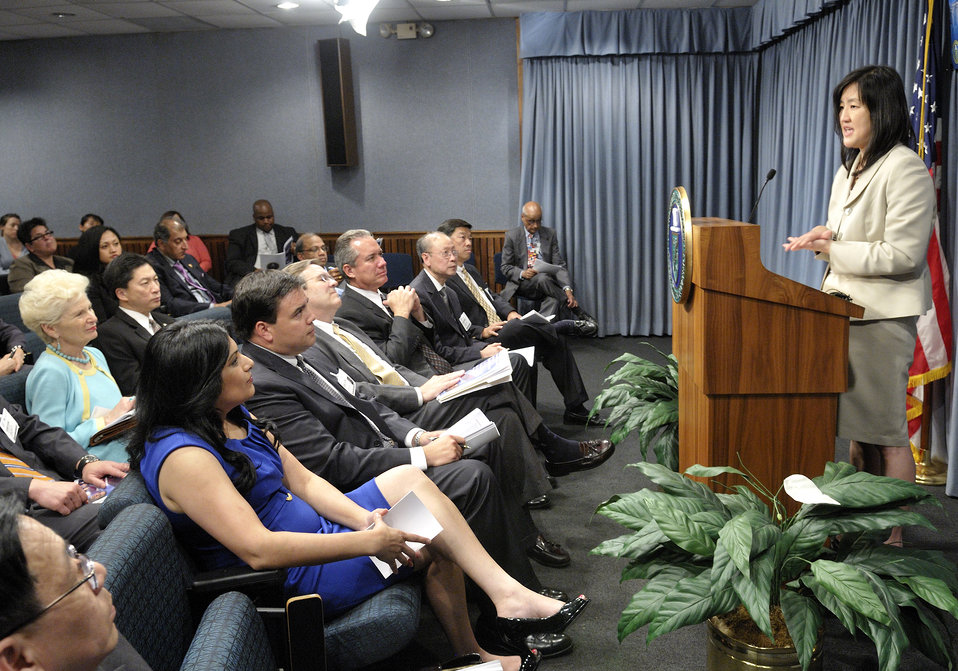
AAPI Heritage Month 2011 (3)